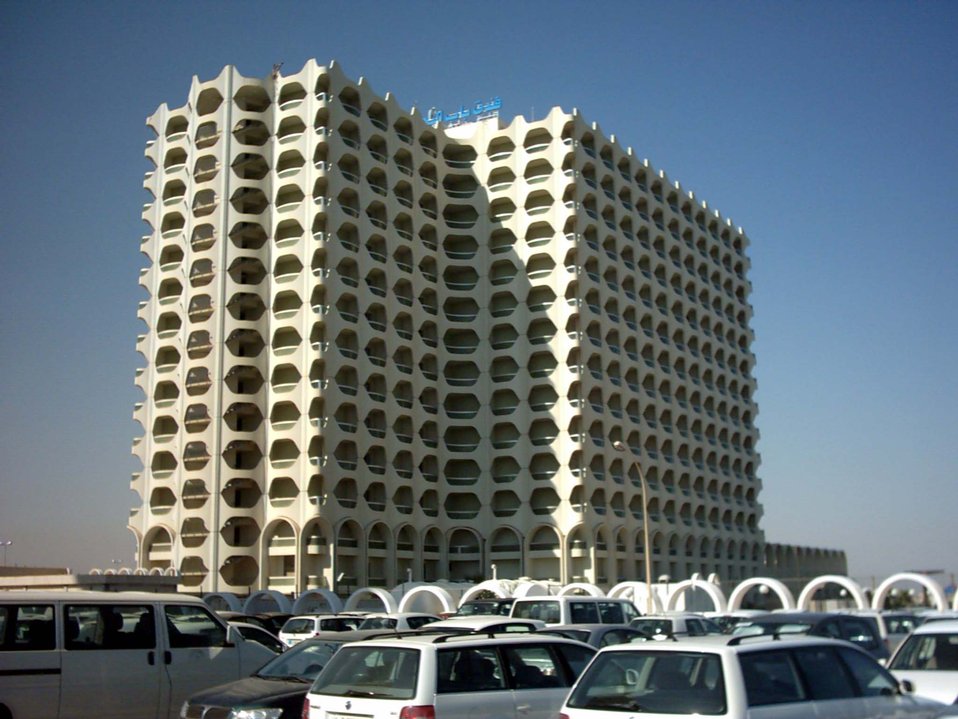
Bab el Bahr Hotel Tripoli 0016